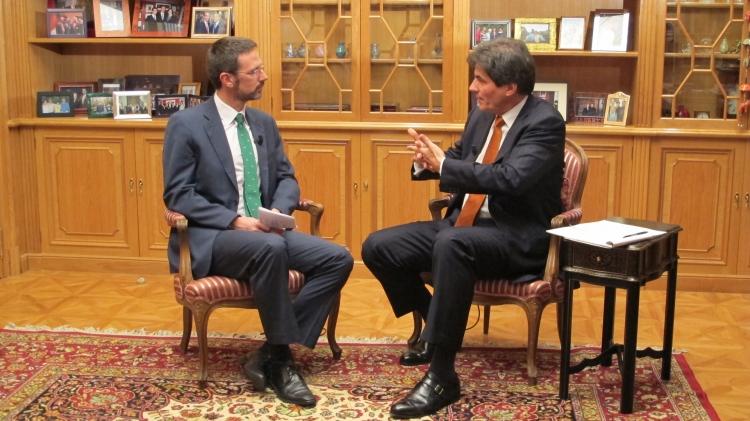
Assistant Secretary Fernandez Is Interviewed by Business TV’s Javier Ablitas

Assistant Secretary of State for Economic, Energy and Business Affairs Jose W. Fernandez is interviewed by Business TV’s Javier Ablitas in Madrid, Spain, on September 29, 2011.